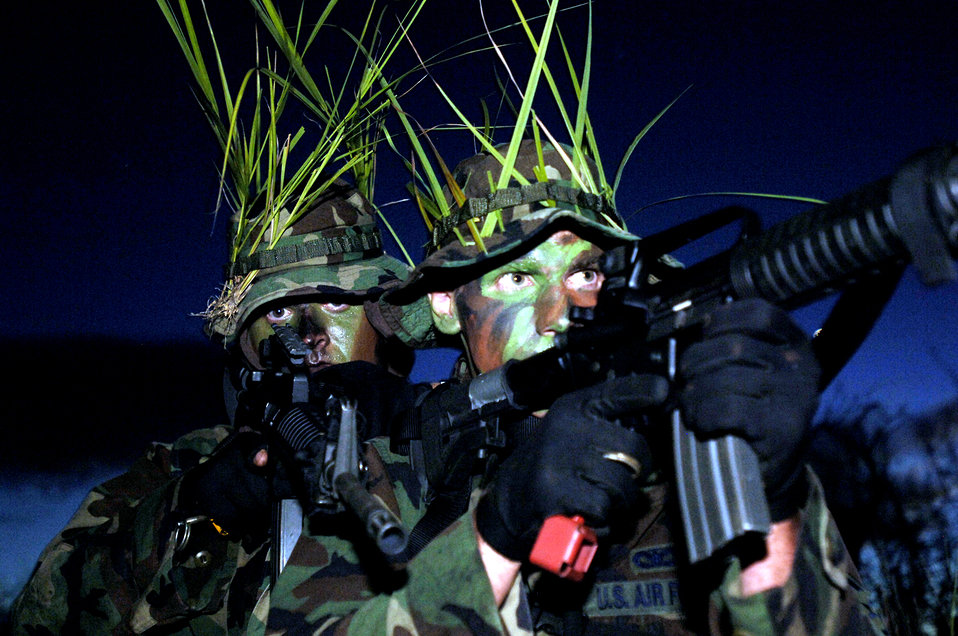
Engaged

NAVAL BASE GUAM -- Senior Airman James Jordan and Navy Petty Officer 1st Class Michael Hammes prepare to engage opposition forces during a special response team training course here recently. Airman Jordan is assigned to the 613th Contingency Response Group at nearby Andersen Air Force Base.